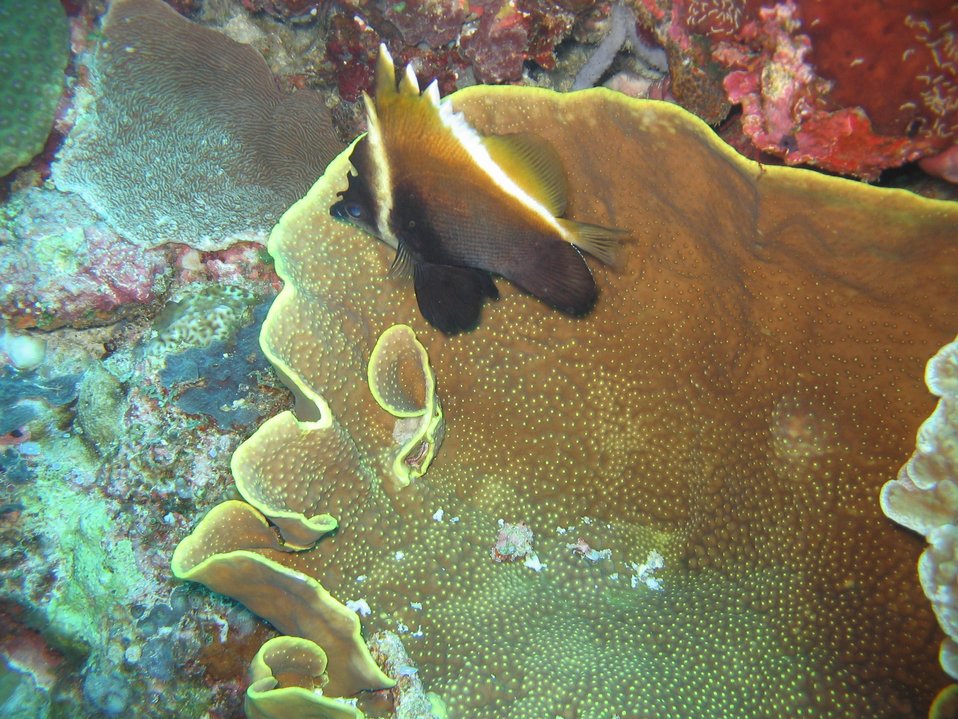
Humphead bannerfish (Heniochus varius)